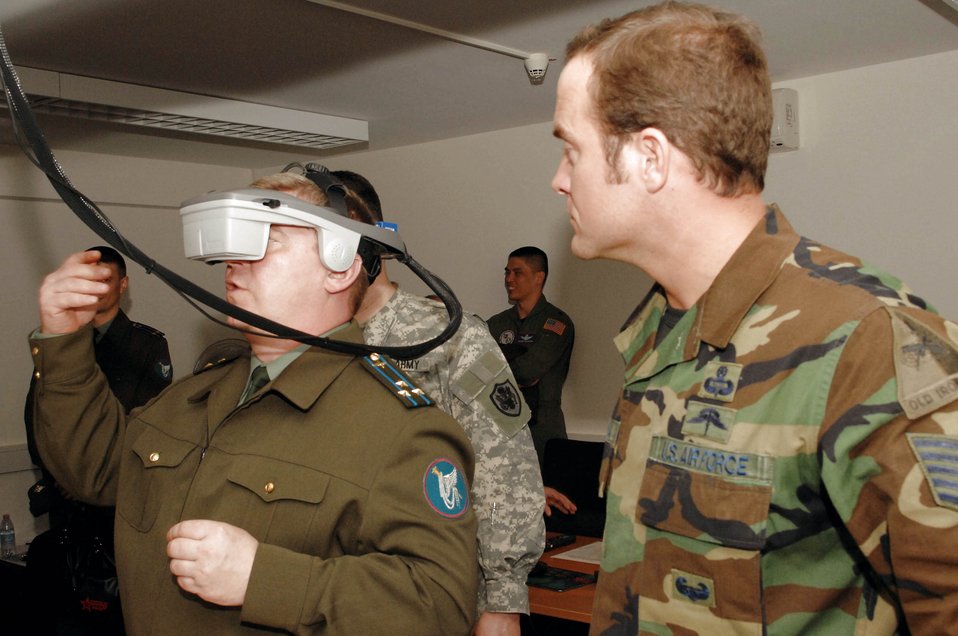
Russian delegation visits USAFE bases

Tech. Sgt. Timothy Pachasa demonstrates the use of the Indirect Fire Forward Air Control Trainer simulator to Russian air force Col. Aleksandu Razygraeu April 30 at Joint Fighters Center for Excellence at Spangdahlem Air Base, Germany. The simulator is a procedural trainer that simulates close-air support and indirect fires. Sergeant Pachasa is a joint terminal attack instructor at the U.S. Air Forces in Europe Air Ground Operations School from Fort Bliss, Texas.